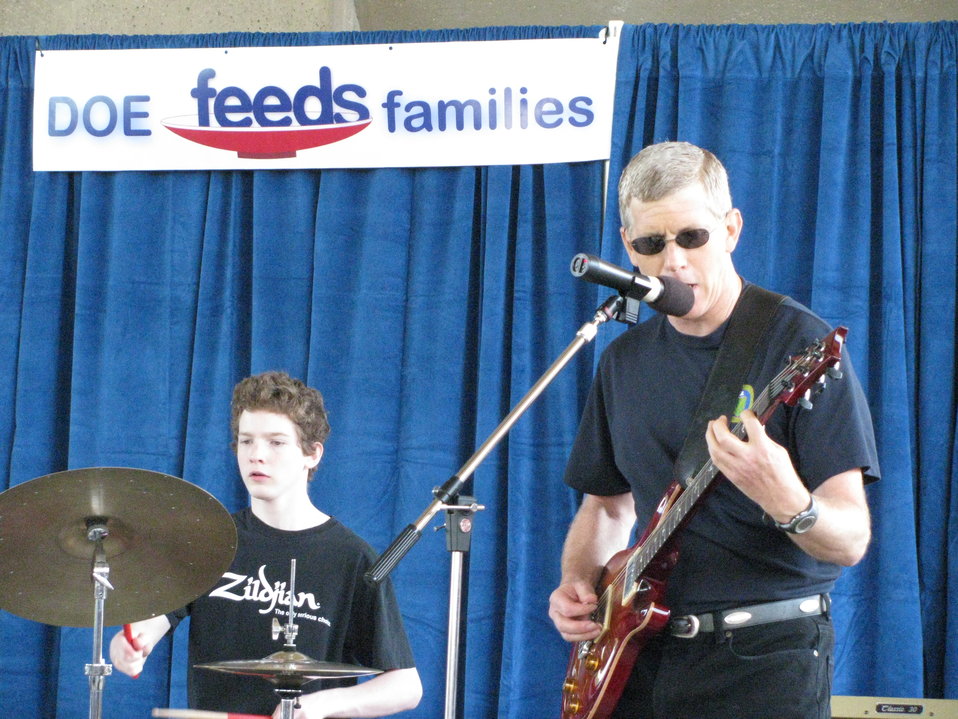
Deputy Secretary Daniel Poneman, and son, in the band 'Yellow Cake'